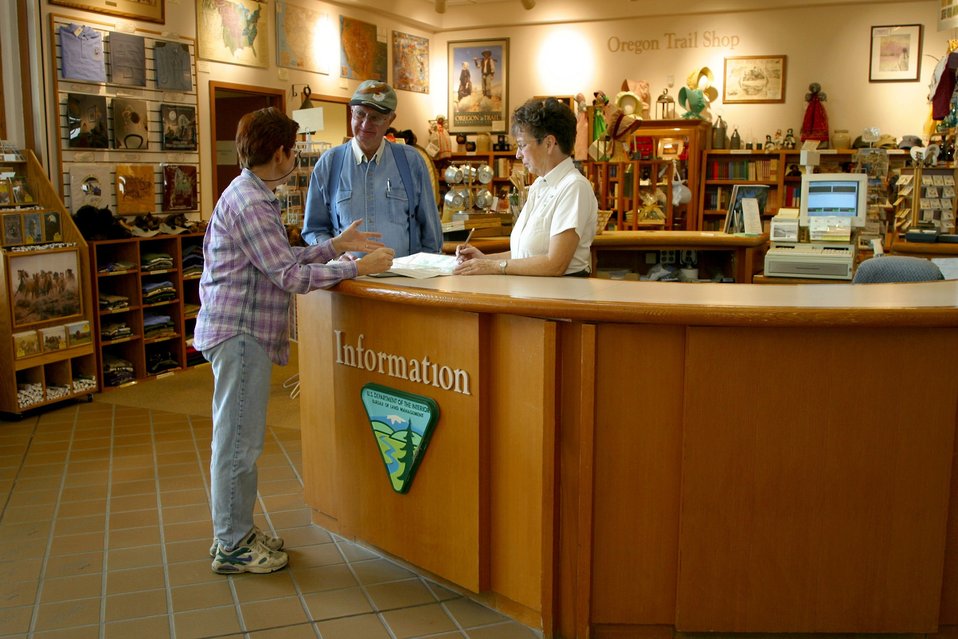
BLM employee Virginia Bloom giving visitors information about the Interpretive Center and the surrounding area.